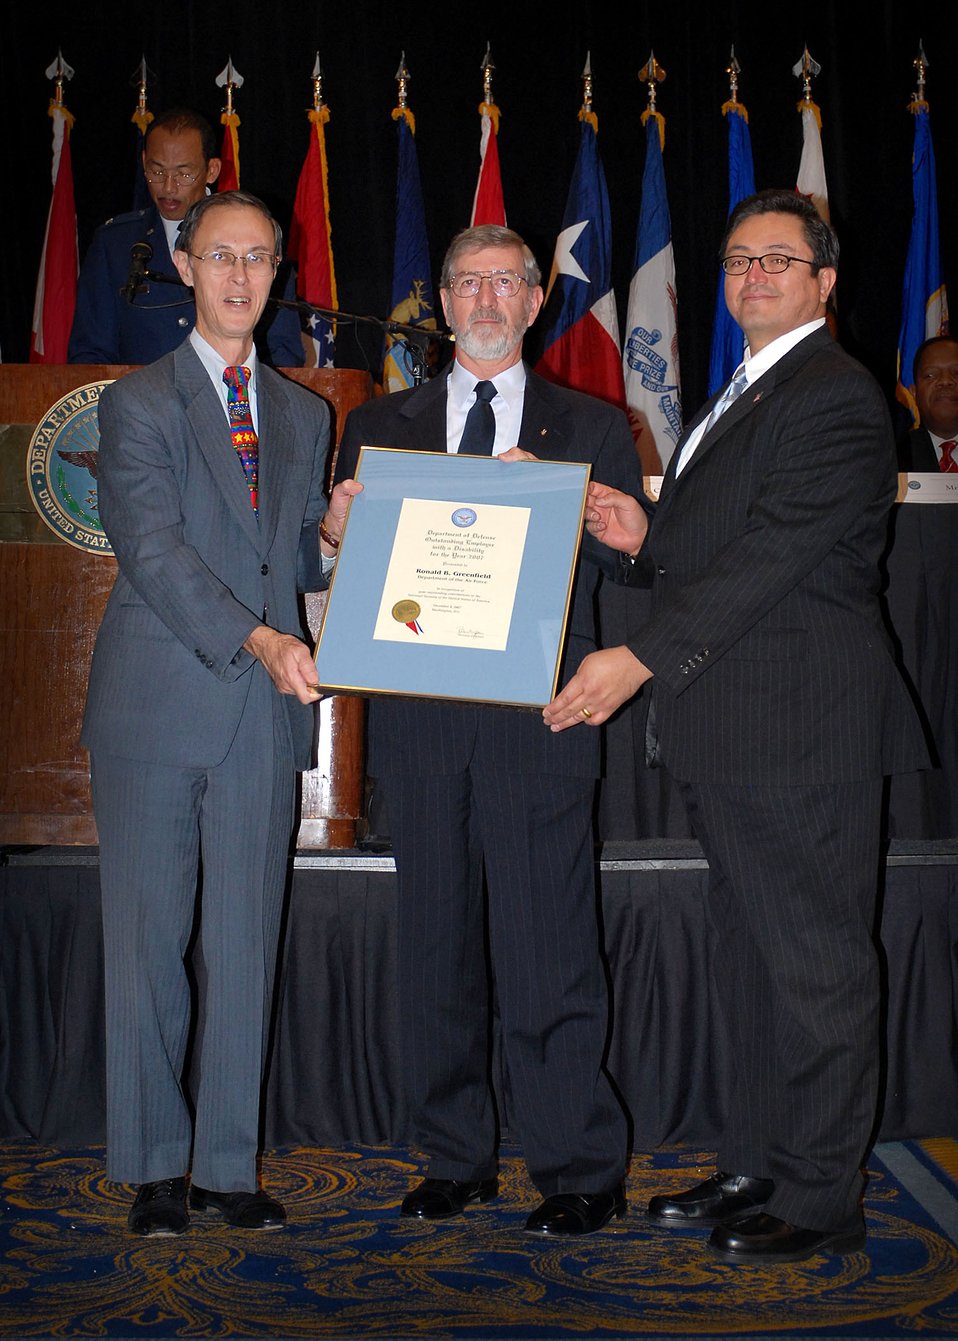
Air Force receives 2 DOD disability awards

Dr. David S.C. Chu (left to right) presents Ronald B. Greenfield with the Outstanding Defense Department Employee with Disabilities Award as Dr. Joseph M. Guzman assists Dec. 4 in Bethesda, Md. Mr. Chu is the undersecretary of defense for personnel and readiness. Mr. Greenfield is the chief of staff for the 24th Special Tactics Squadron at Pope Air Force Base, N.C. Mr. Guzman is the deputy assistant secretary for strategic diversity integration in the Office of the Assistant Secretary of the Air Force for manpower and Reserve affairs. Mr. Guzman also received the DOD organizational disability award presented to the Department of the Air Force. The purpose of the annual ceremony is to increase the awareness of the contributions to national security made by those working in the system with mental and physical disabilities.